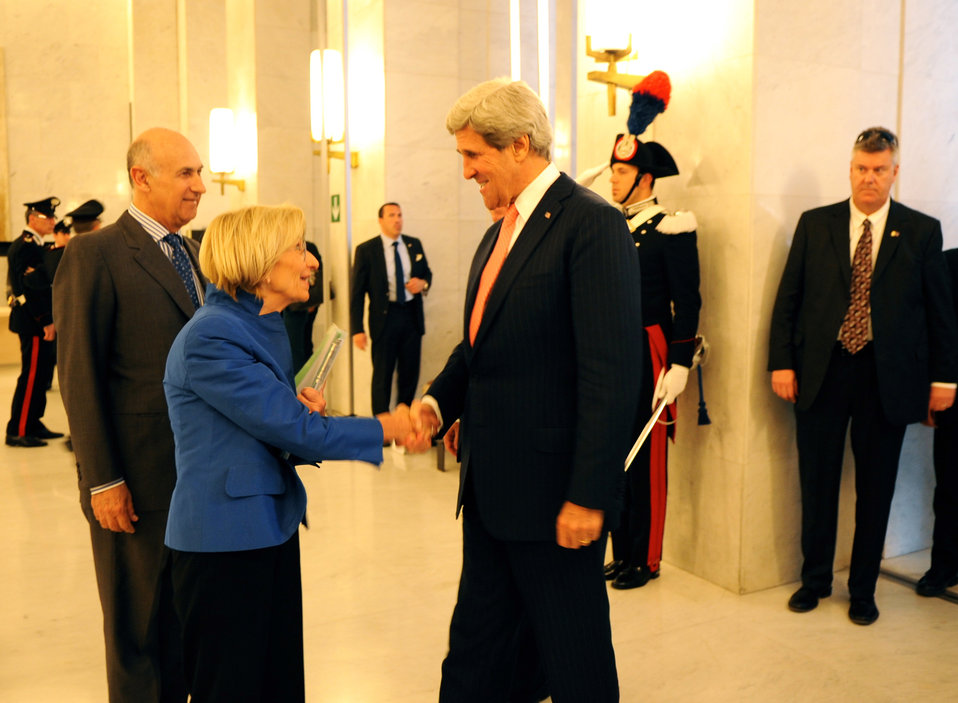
Secretary Kerry Is Greeted By Italian Foreign Minister Bonino

U.S. Secretary of State John Kerry is greeted by Italian Foreign Minister Emma Bonino before their meeting in Rome, Italy, on May 9, 2013.